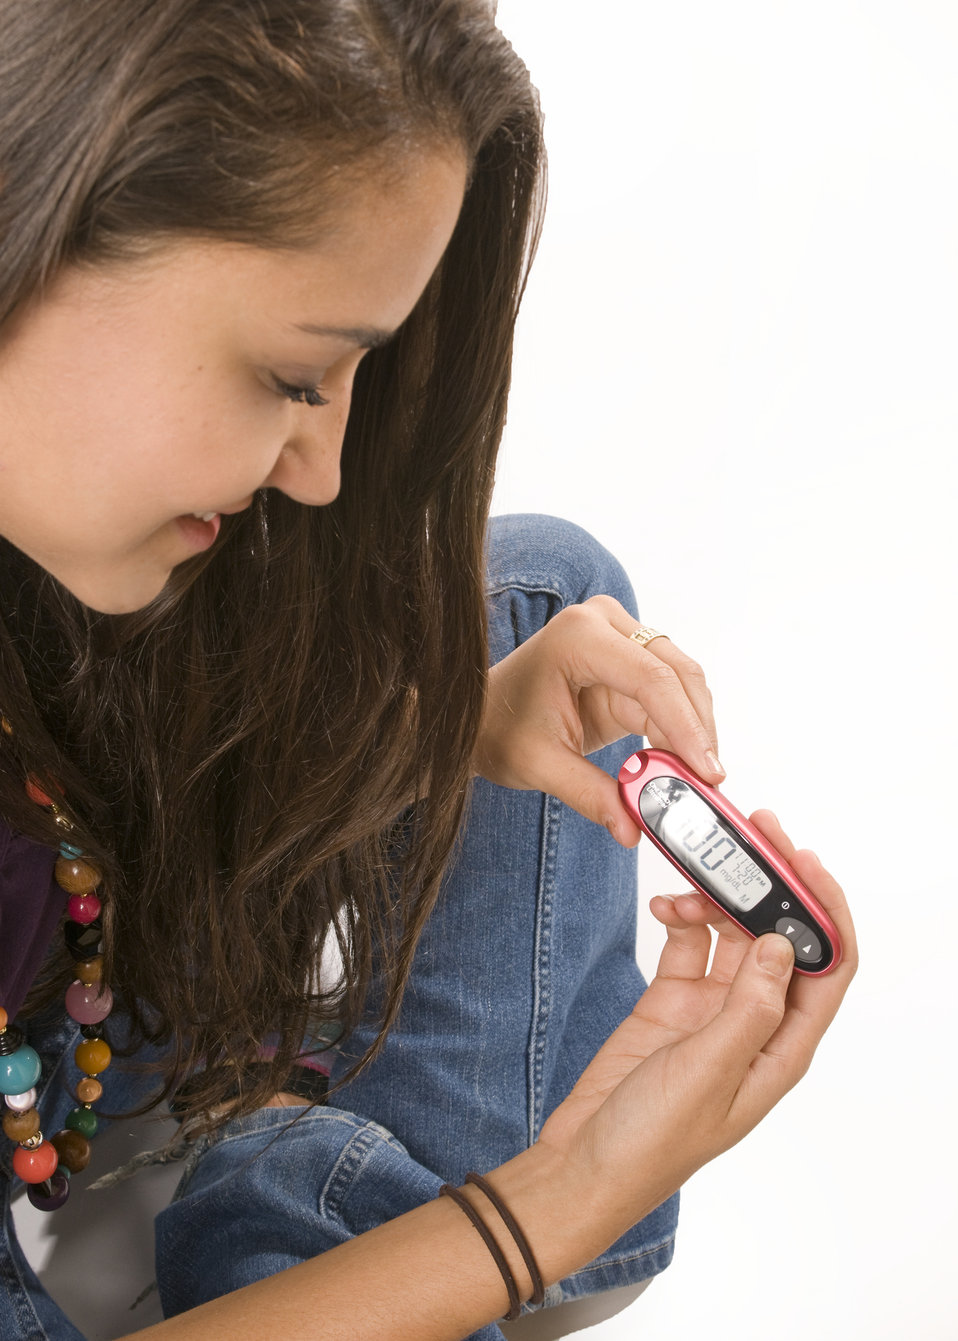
A girl performing a glucose test

This photograph depicts a young diabetic girl who was in the process of carrying out a self-monitored blood glucose test. After having performed a finger stick, and introduced the blood droplet to the glucose monitor, she was now in the process of reading the liquid crystal display on the monitor in order to find the level of glucose in her blood.